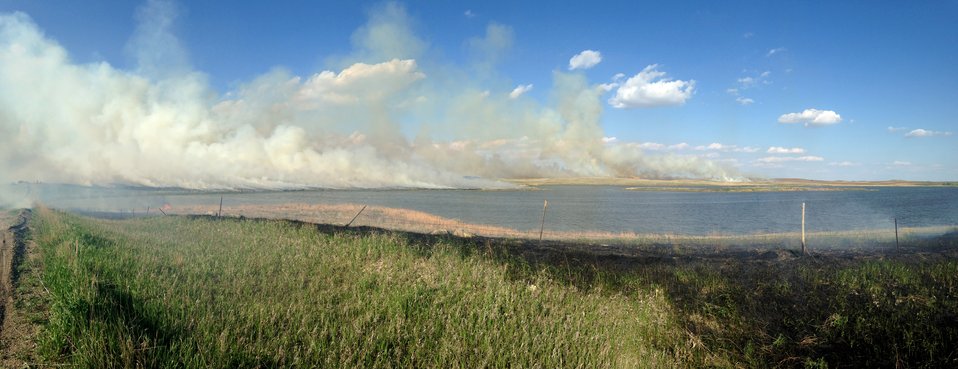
Knecht WPA Prescribed Fire

Prescribed fire is a management tool that is used to maintain the vigor of a prairie. As with grazing, native prairie plants adapted to the frequent fires that raged across the Great Plains. These fires were historically started by lightning strikes and burned many miles of uninterrupted prairie. Fire is one of the best management tools for weakening non-native species. It removes the accumulated litter layer, stimulates new plant growth, and can be used to prepare ground for restoration.